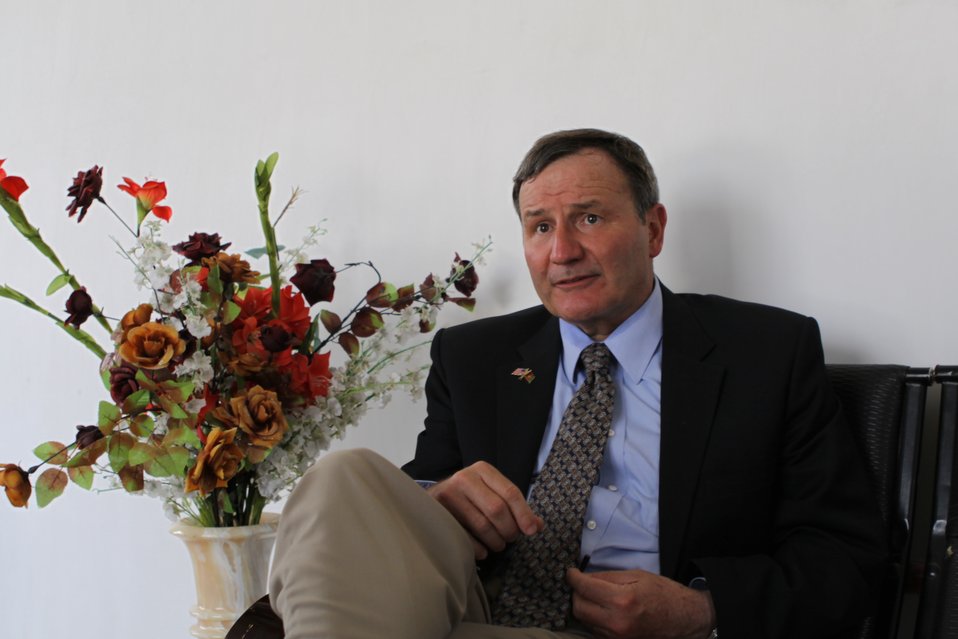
100525 Hirat Marble Conference 876